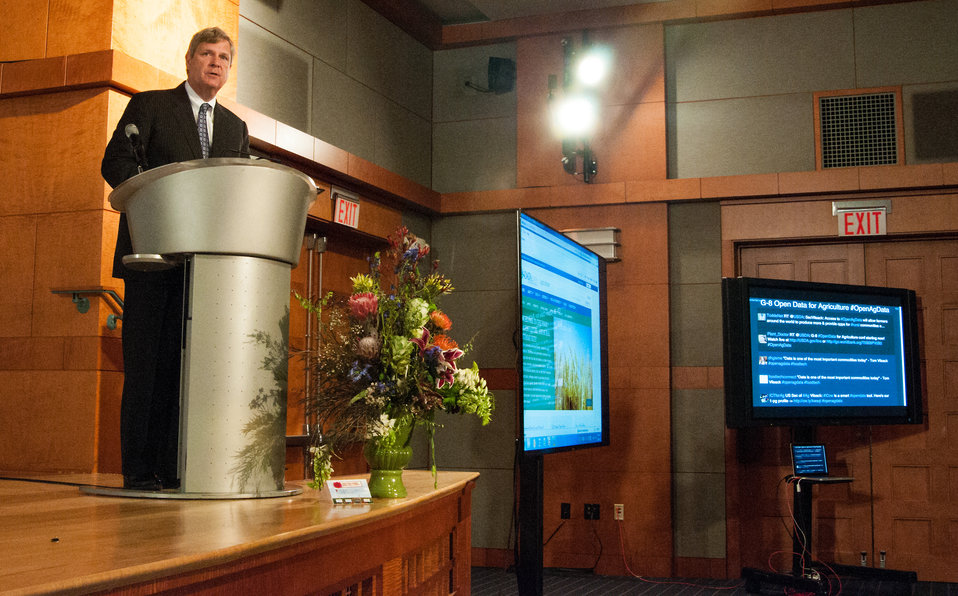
Agriculture Secretary Tom Vilsack makes opening remarks at the G-8 International Conference on Open Data for Agriculture in Washington, D.C. on Monday, Apr. 29, 2013. Secretary Vilsack announced the launch of a new 'virtual community' as part of a suite of actions, including the release of new data, that the U.S. is taking to give farmers and ranchers, scientists, policy makers and other members of the public easy access to publicly funded data to help increase food security and nutrition.